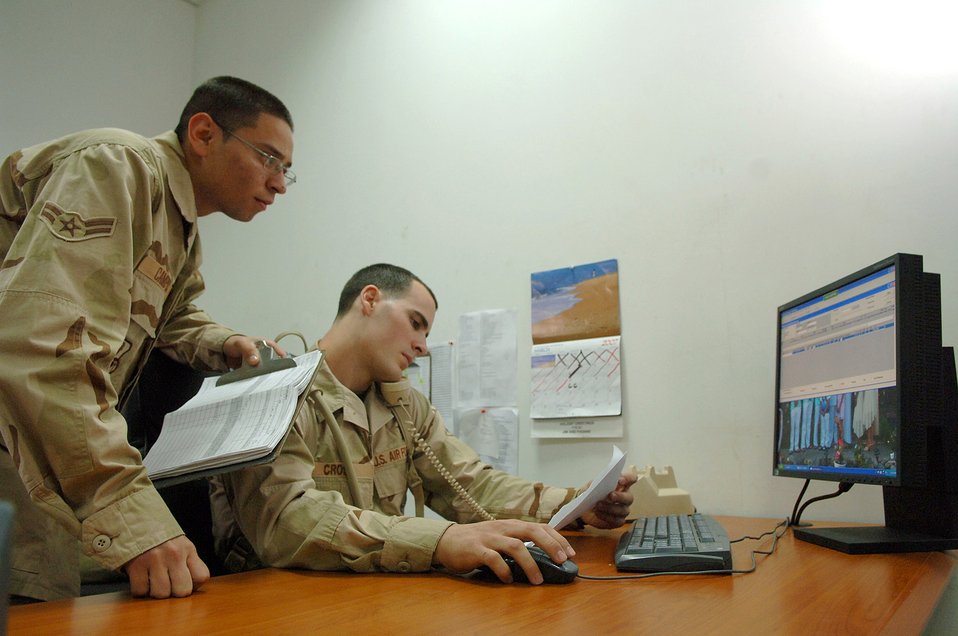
Balad's busy aerial port supports, supplies the fight

Airmen 1st Class Erick Campos and Nicholas Cross import cargo data into a computer program for processing March 14 at Balad Air Base in Iraq. Cargo processors also inspect pallets and loose cargo that comes through the base. The Airmen are assigned to the 332nd Expeditionary Logistics Readiness Squadron Aerial Port Flight.